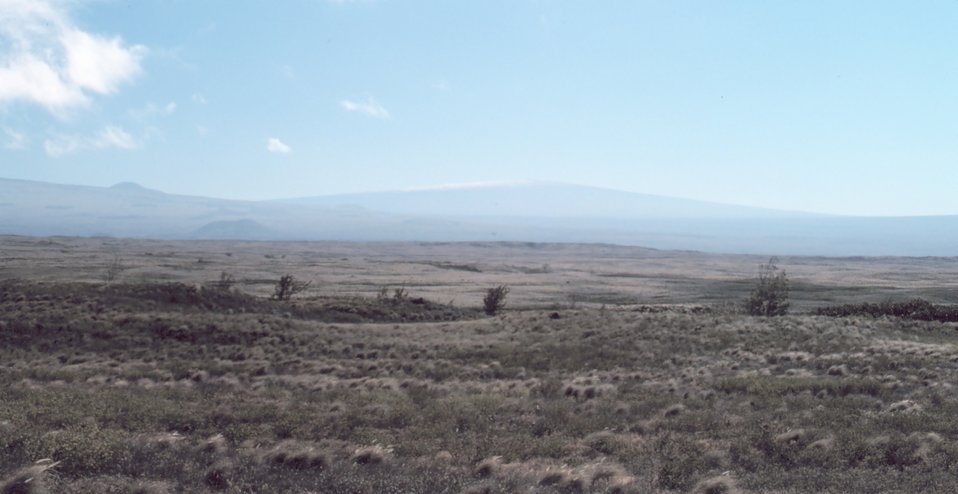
A near desert appearing scene south of the Kohala Mountains on the Parker Ranch.